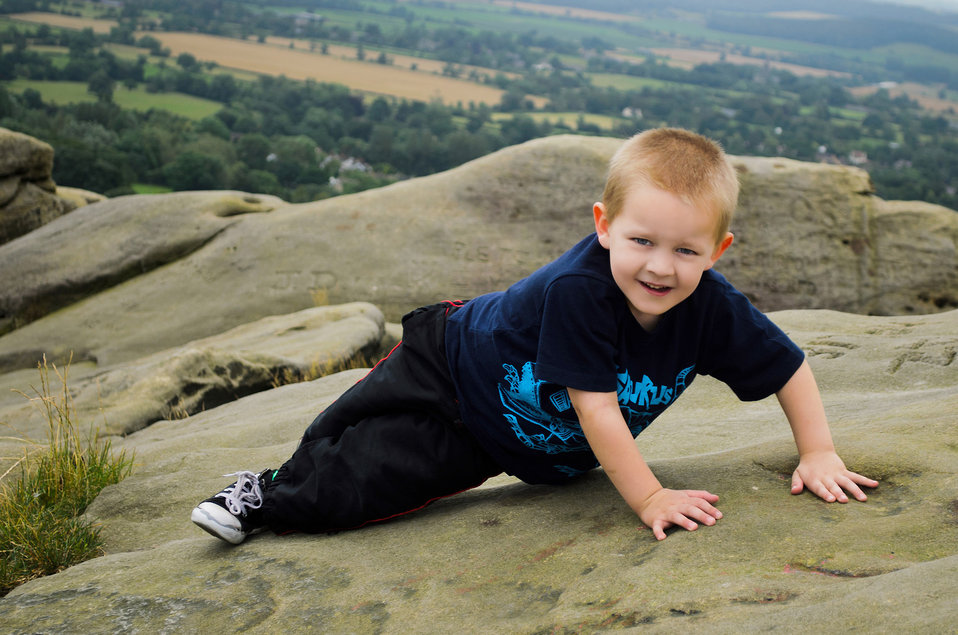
Climbing the rocks.